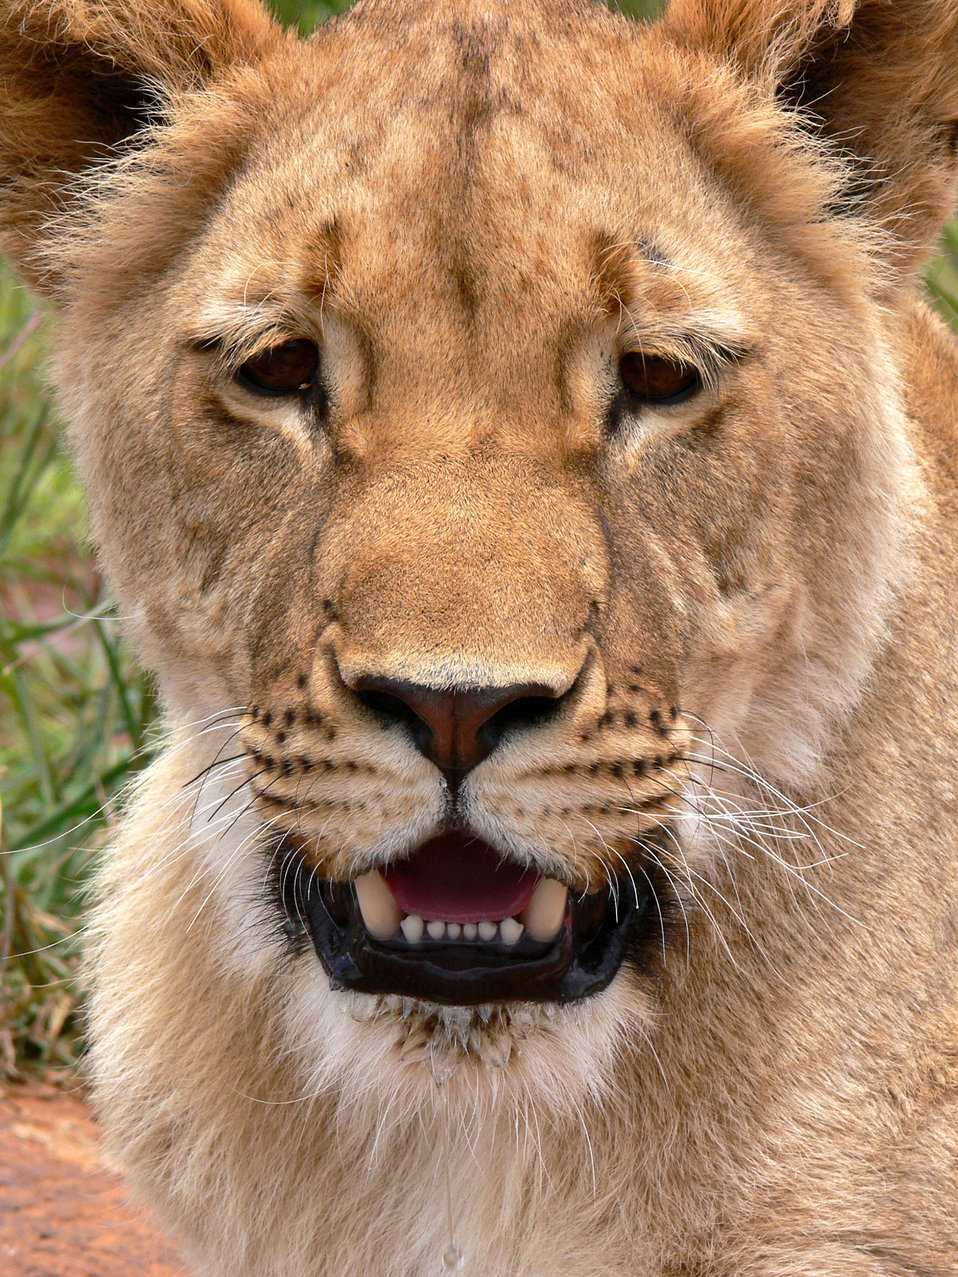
Lioness portrait

Close up portrait of lioness.